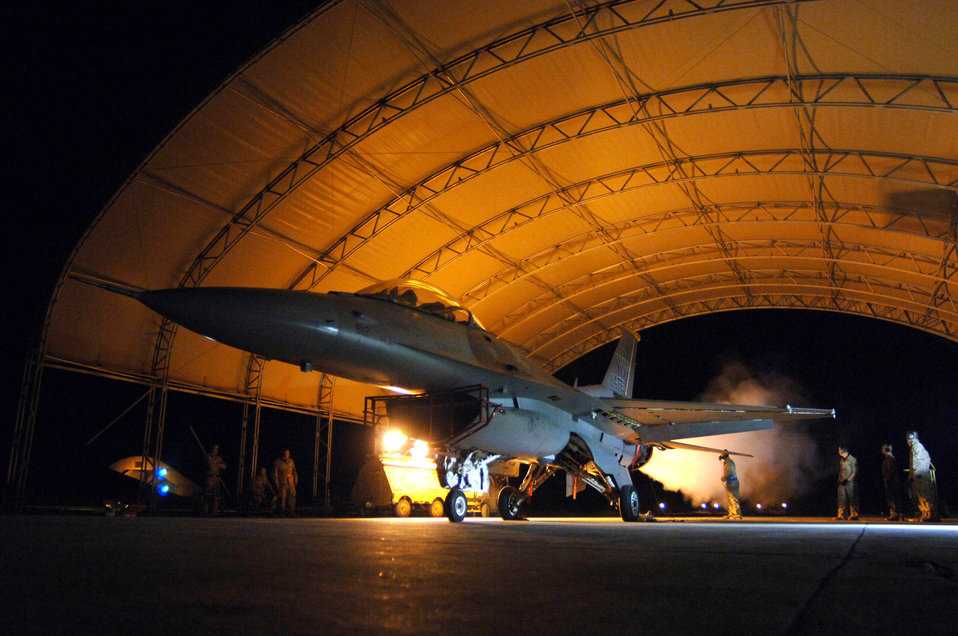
Airpower summary for Sept. 19, 2007

Airmen conduct an engine-run operational check during a phase inspection on an F-16 Fighting Falcon at Balad Air Base, Iraq. Maintainers ensure that all ground and functional checks are accomplished after every 400 flying hours to make sure every aircraft is mission ready. The Airmen are with the 332nd Expeditionary Maintenance Squadron.